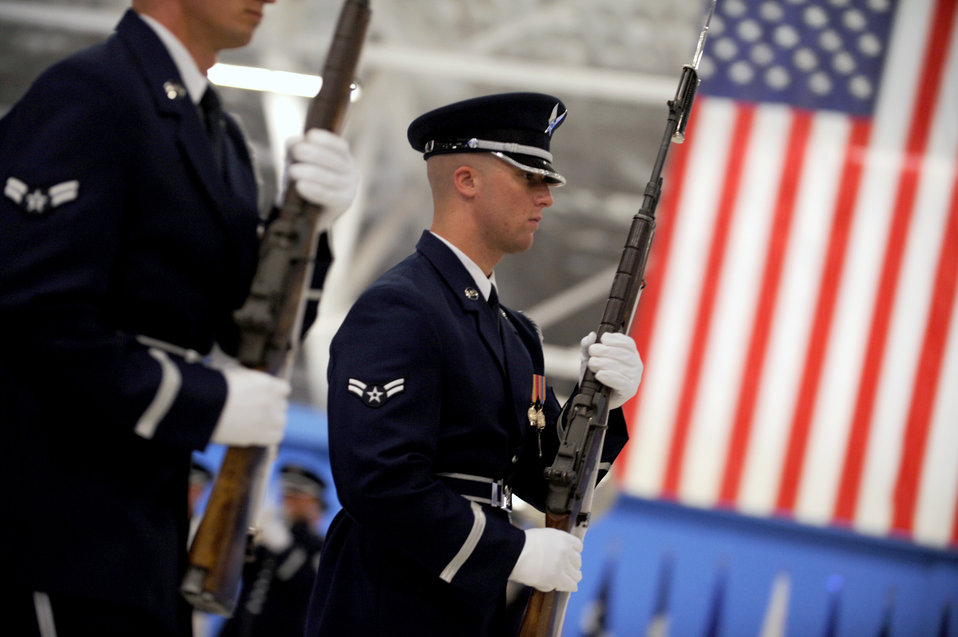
Welsh ‘humbled’ to serve as Air Force chief of staff

Flights from the U.S. Air Force Honor Guard pass in review for Gen. Norton Schwartz and new Air Force Chief of Staff Gen. Mark A. Welsh III during a ceremony at Joint Base Andrews, Md., Aug. 10, 2012. Schwartz served in the Air Force for 39 years, the last four years as the Air Force’s senior uniformed leader. Prior to becoming the Air Force chief of staff, Welsh commanded U.S. Air Forces in Europe.